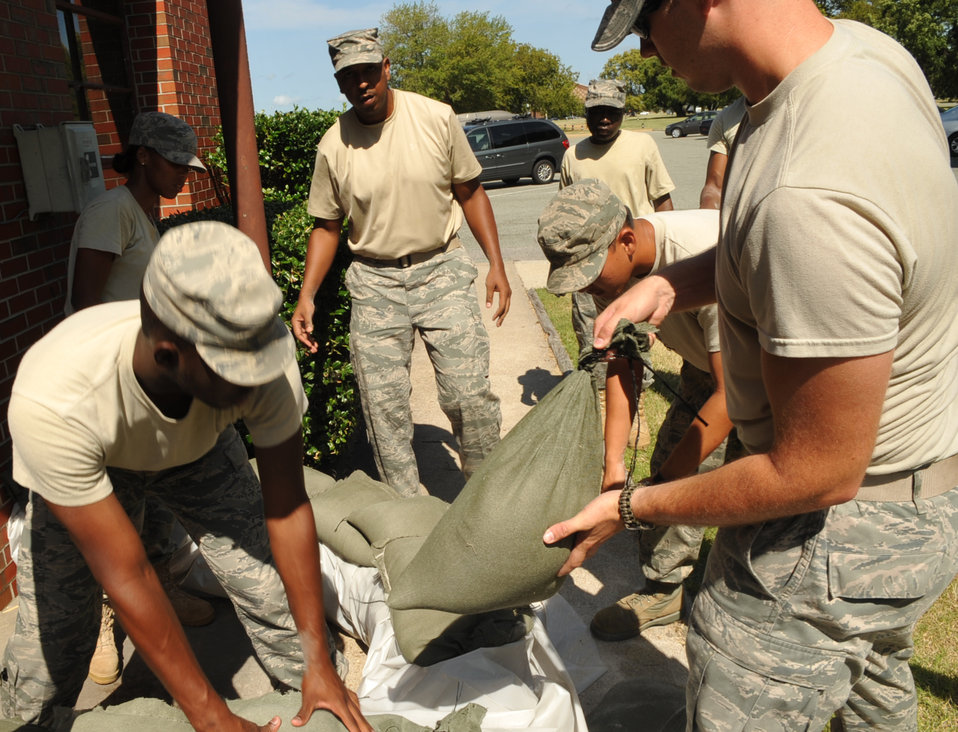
Preparing for the storm

Airmen from the 633rd Communications Squadron sandbag the doorways at the base telephone office Aug. 25, 2011, in an effort to prevent flooding at Langley Air Force Base, Va. The base is preparing for Hurricane Irene, which is expected to make landfall in the area early Sunday morning.